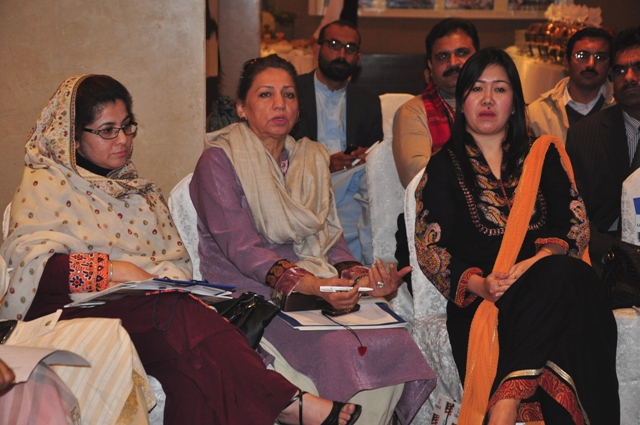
Workshop Participants engaged in group discussion.